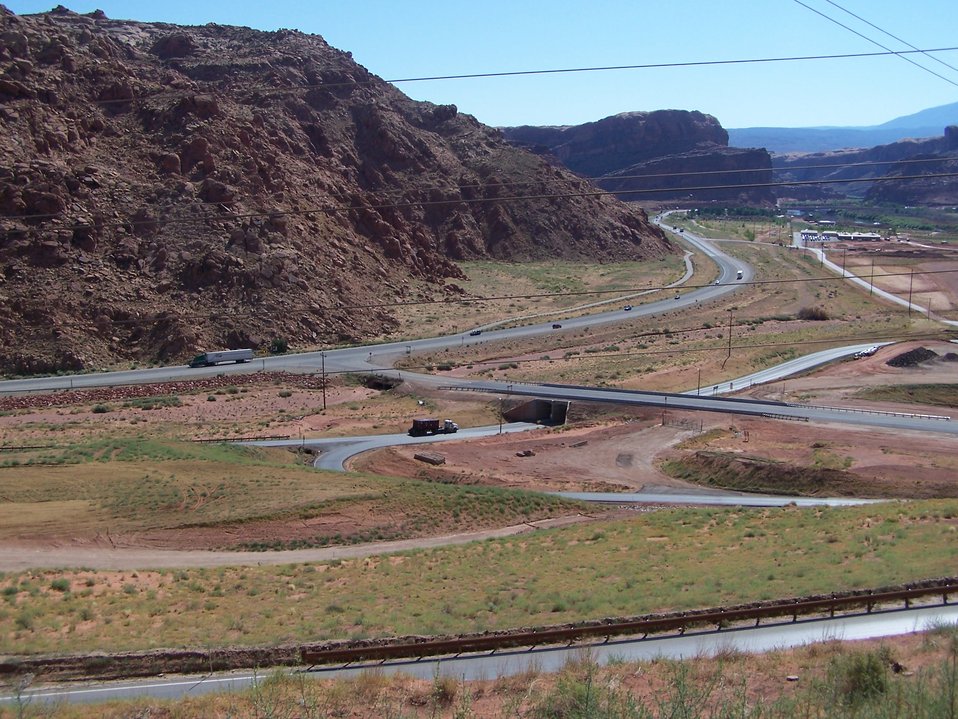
Moab Mill Tailings Project Marks Many Recovery Act Accomplishments

A truck carrying a container full of tailings is exiting the underpass (center of photo) and heading up the paved haul road to the rail load out area.